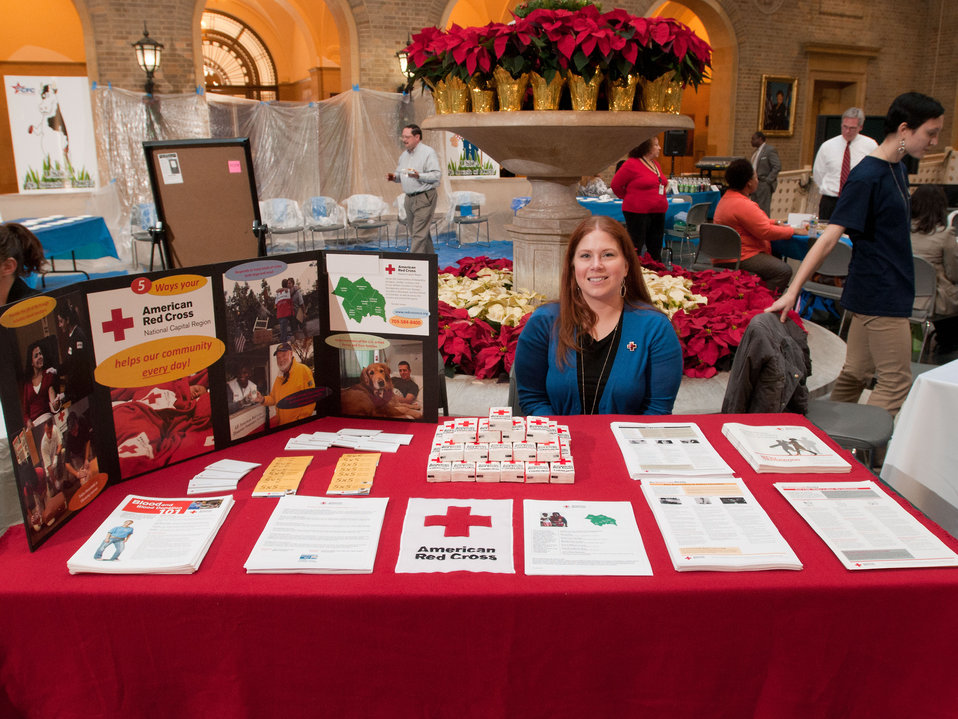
American Red Cross Community Executive Jessica Adams provides American Red Cross awareness during the Combined Federal Campaign (CFC) fundraiser at the U.S. Department of Agriculture (USDA) headquarters, on Monday Dec. 3, 2012, in Washington, D.C. The event featured a 'Pie Smash” event where attendees, on personal time, donate money to throw non-dairy whipped 'cream' pies at Agriculture leadership. Other fund raising activities at this event included a silent auction, candy packets, bake sale, and pulled-pork sandwich lunches for donations. Additionally, information tables for Red Cross and Canine Partners for Life provided people with answers about the organizations and how to participate.